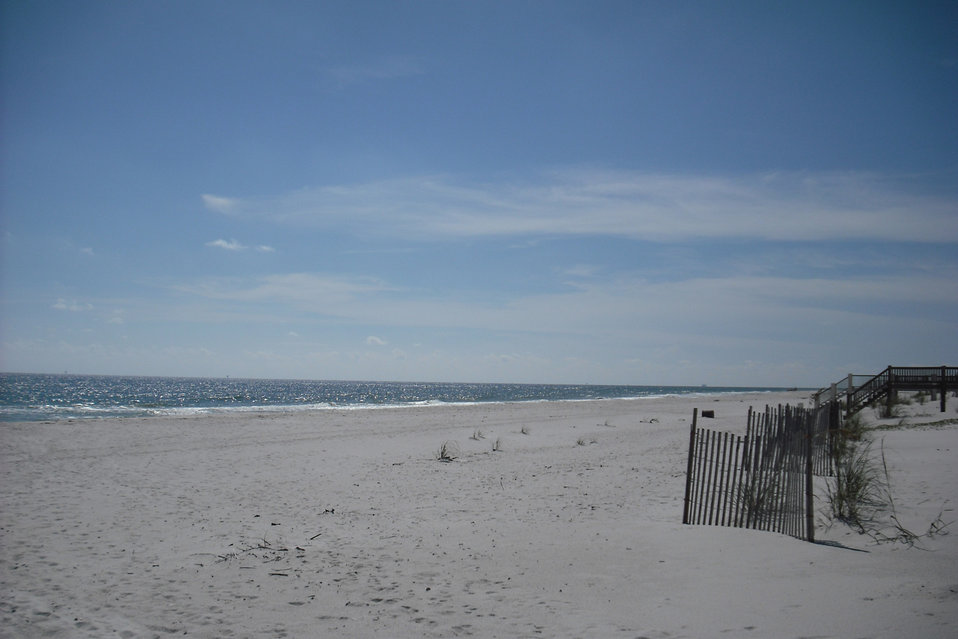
Welcoming beach, Alabama